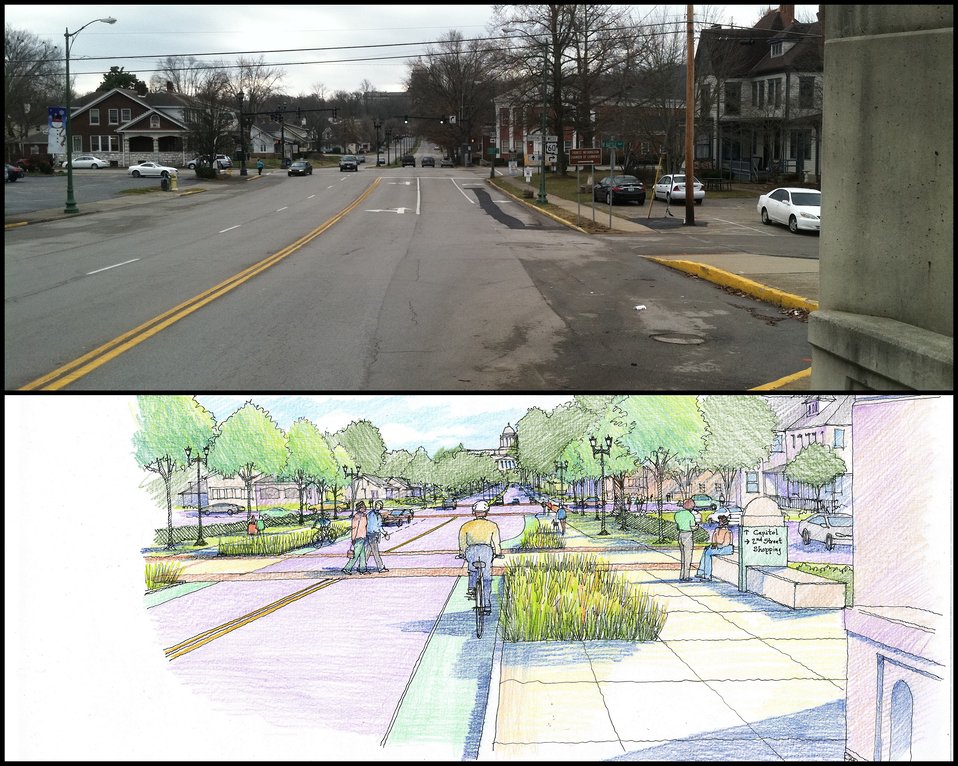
Greening America’s Capitals Before / After, Frankfort, KY

The design option for Capital Avenue at Second Street includes bicycle lanes, wider sidewalks, signage, seating, rain gardens, and trees. The goal is to make the area approaching the Capitol building more appealing and environmentally sustainable.

www.epa.gov/smartgrowth/greencapitals.htm

EPA's Greening America's Capitals program helps cities include sustainable design strategies --such as green infrastructure -- in their planning and development. These concepts lead to distinctive neighborhoods that enjoy multiple social, economic, and environmental benefits. Cities are selected through a competitive application process, and many have begun to implement these enhancements with private, as well as local, state, and other federal, investments.

December 3, 2013